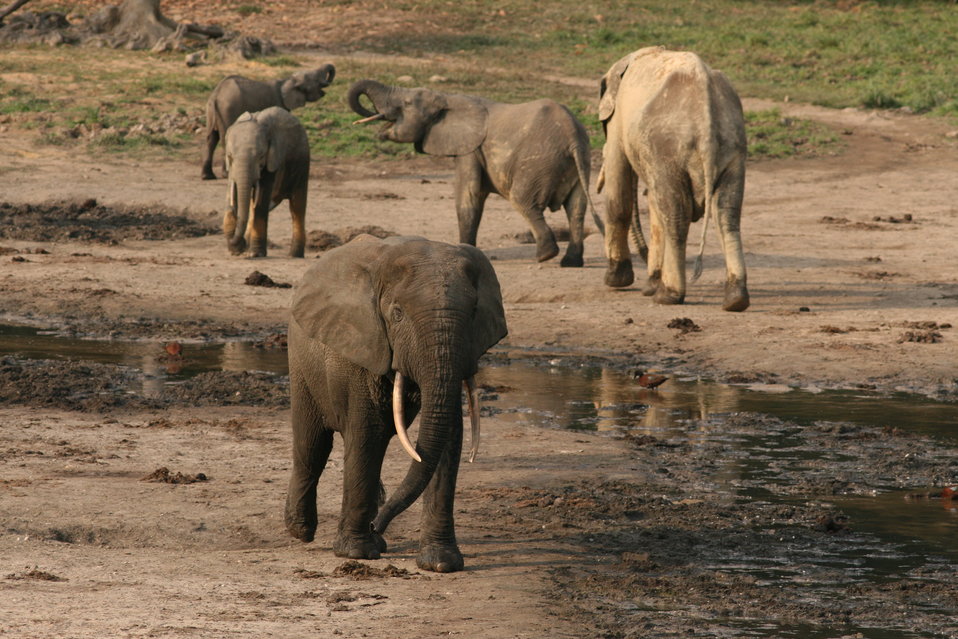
Forest elephant group 9

Undisturbed, elephants can live to be sixty years old. Their tusks grow throughout their life.